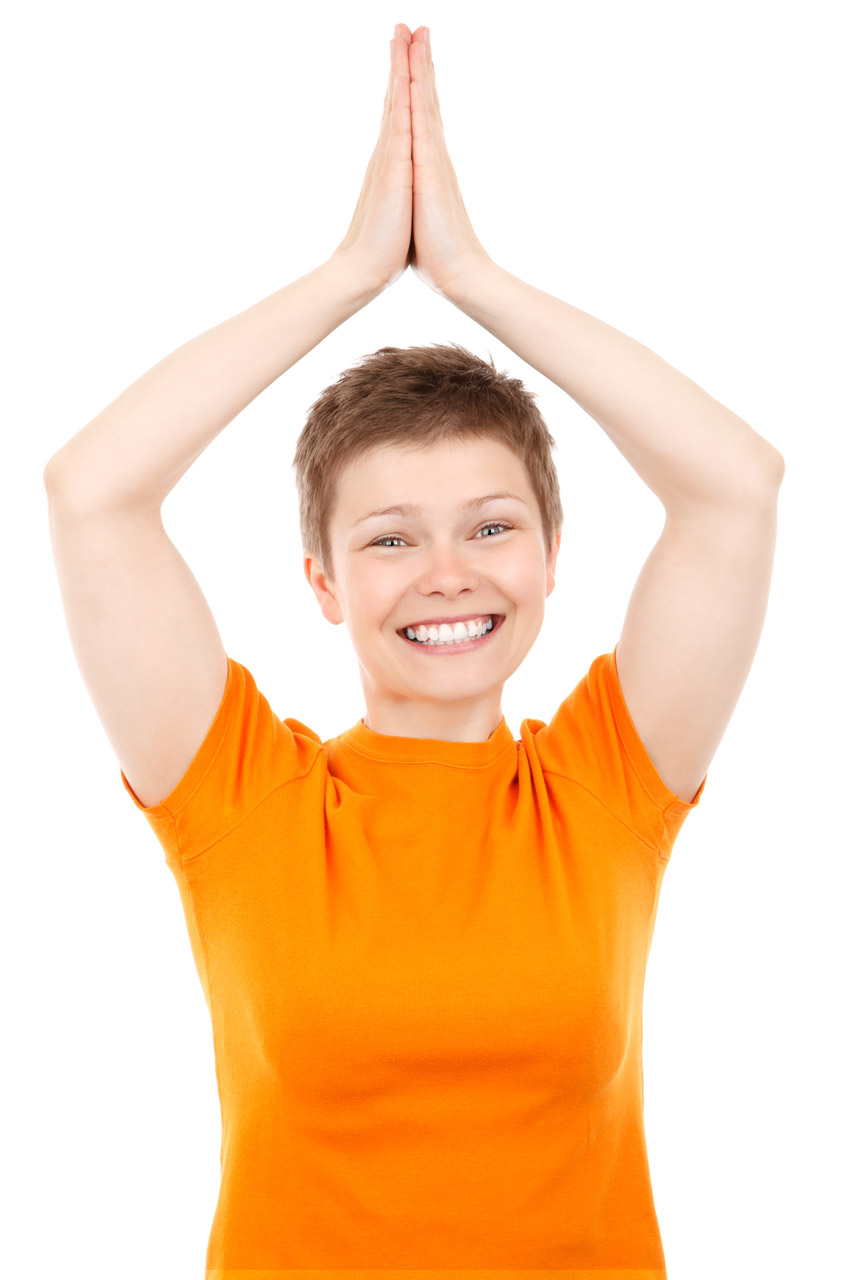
Dancing pose

Young woman in orange t-shirt showing a dancing pose isolated on white background.